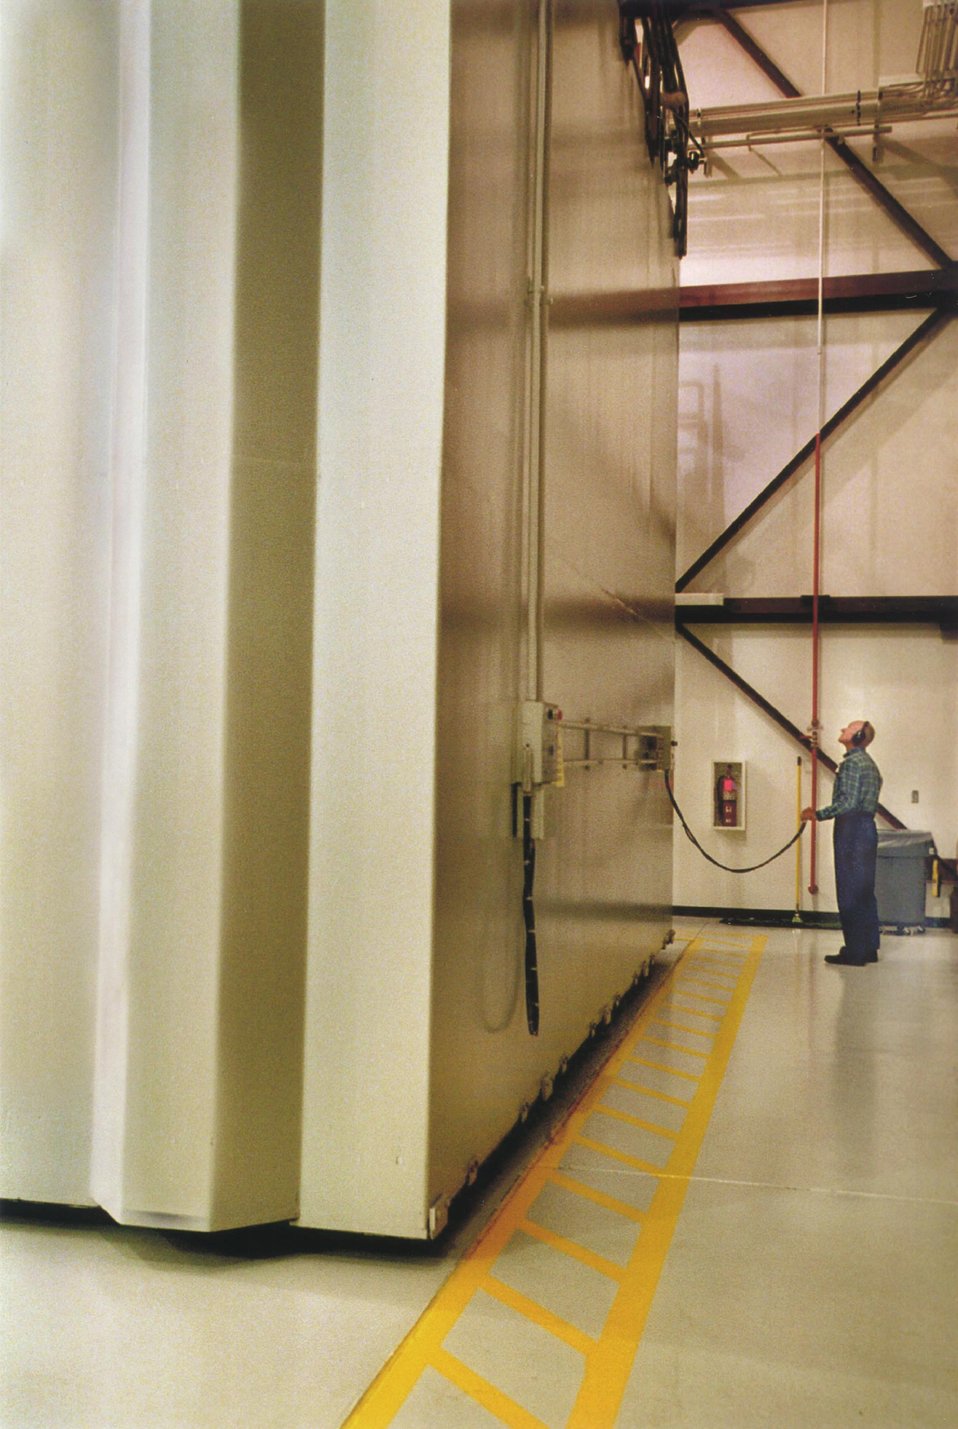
SNL SCIENTISTS OPERATES THE 480,000 LB. DOOR& TO THE GAMMA IRRADIATION FACILITY'S LARGE TEST CHAMBER.

THE GIF FACILITY CAN BE USED FOR MANY APPLICATIONS, INCLUDING SPACE DEVELOPMENT, MILITARY SYSTEMS VULNERABILITY TESTING AND NUCLEAR REACTOR COMPONENT DEVELOPMENT. THE FACILITY CONTAINS THREE LARGE TEST CELLS, SPACIOUS ENOUGH TO IRRADIATE LARGE OBJECTS SUCH AS TANKS AND SATELLITES, AS WELL AS MIRCOCHIPS FOR THEIR ABILITY TO WITHSTAND THE DAMAGING RADIATION ENVIRONMENTS THEY MAY EXPERIENCE IN SPACE, NEAR STORED NUCLEAR MATERIALS, OR DURING A WARTIME NUCLEAR EXCHANGE.